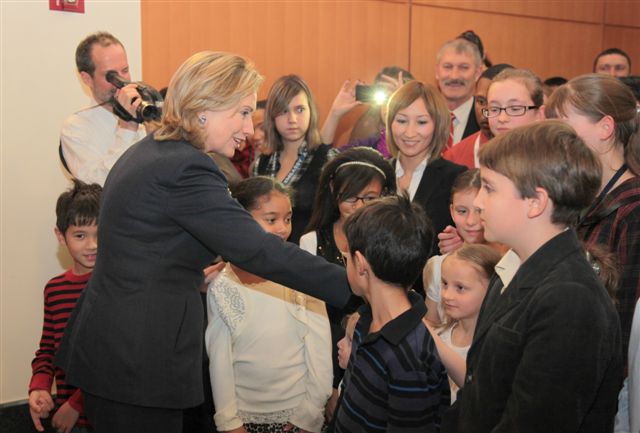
Secretary Clinton Greets Members of the U.S. Embassy Astana Staff

U.S. Secretary of State Hillary Rodham Clinton greets members of the U.S. Embassy Astana staff and their families in Astana, Kazakhstan, on December 1, 2010.